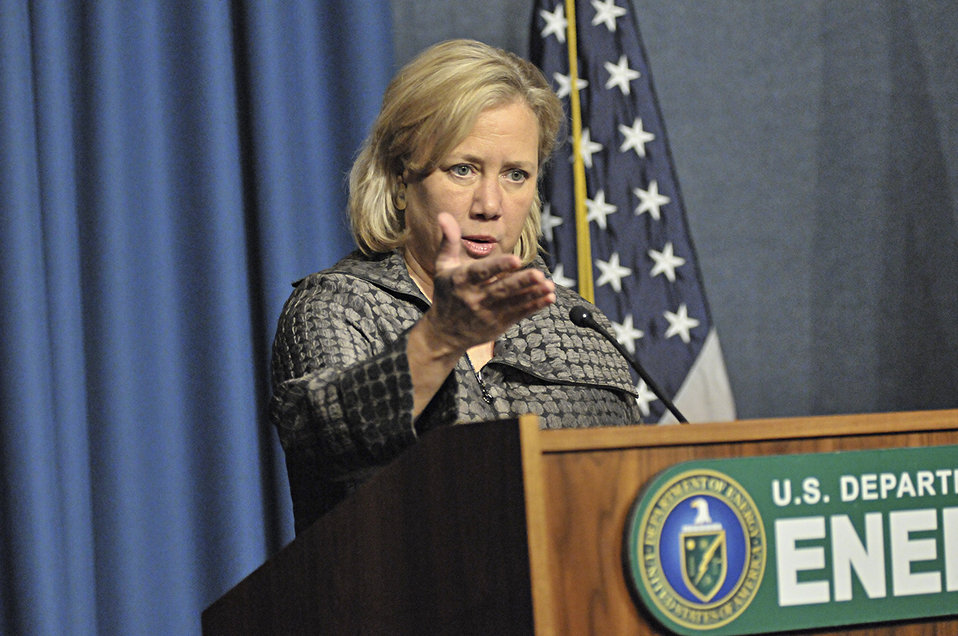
Launching the Minorities in Energy Initiative

Senator Mary Landrieu of Louisana gives keynote remarks at the launch of the Minorities in Energy Initiative on September 24, 2013.